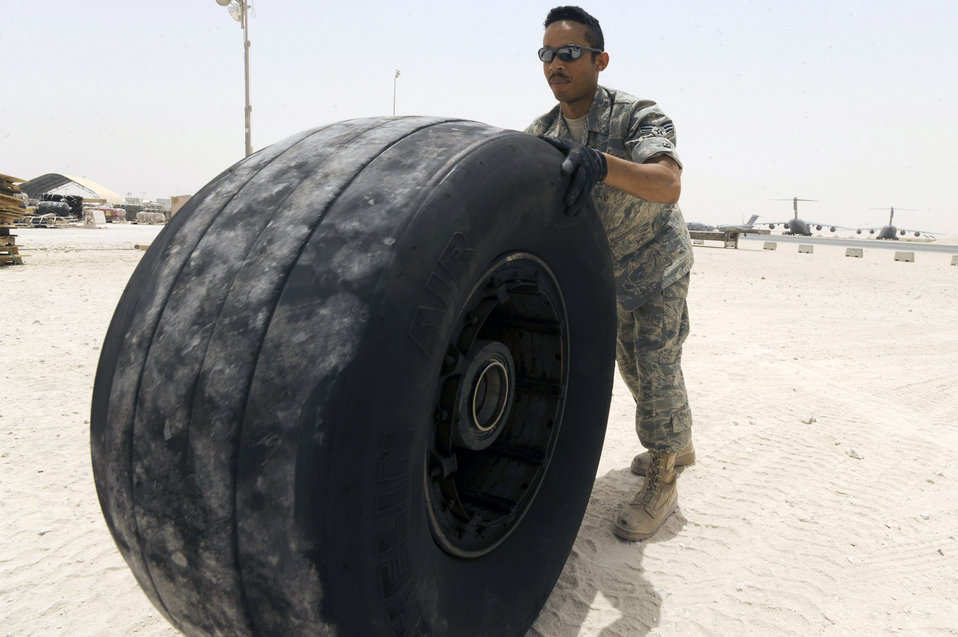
A real flat

Senior Airman Luis Olivencia, a maintainer with the 8th Expeditionary Air Mobility Squadron at an air base in Southwest Asia, rolls an unserviceable C-17 Globemaster III tire from a holding area June 10 so it can be palletized for shipment.